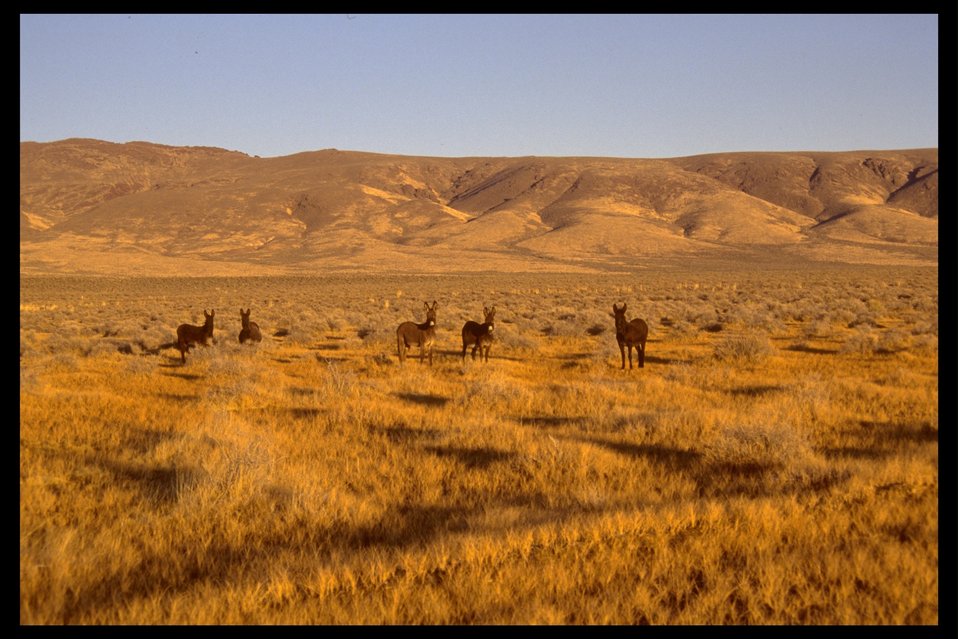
Undetermined.